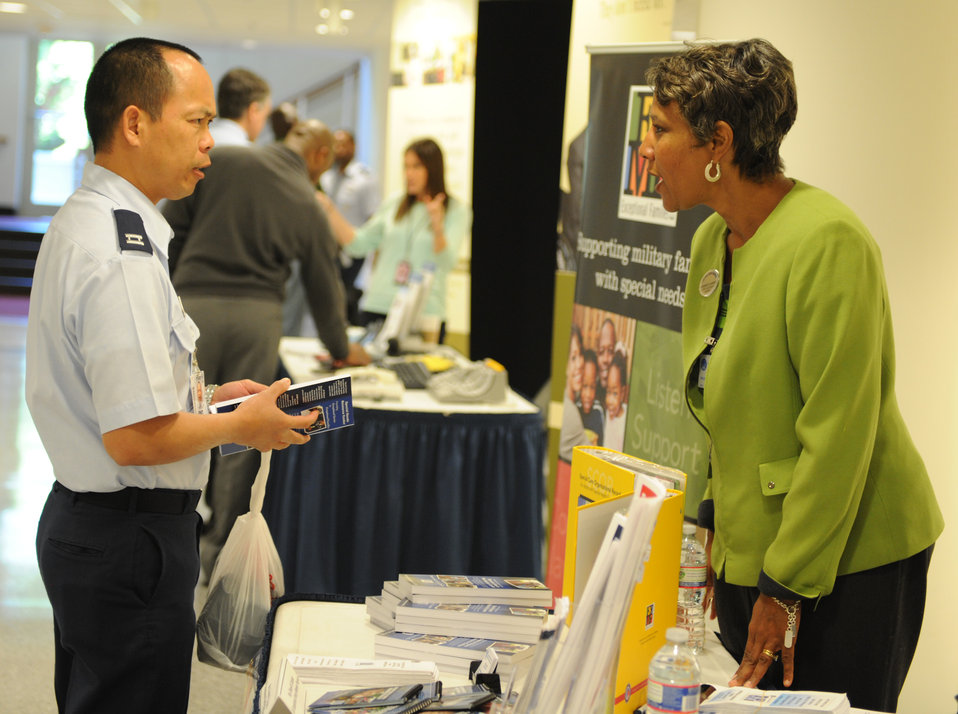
Diversity

Adrienne Barnett speaks to Capt. Kevin Tran at an event held by the Headquarters Air Force to recognize National Disability Employment Awareness Month at the Pentagon on Oct. 1. The intent of the event was to educate Air Force employees and managers on various aspects of Disability Employment and Accommodations. Barnett is an Exceptional Family Member Program family support specialist and Tran is the chief of Force Support Readiness Plans with the Force Support Readiness Division.